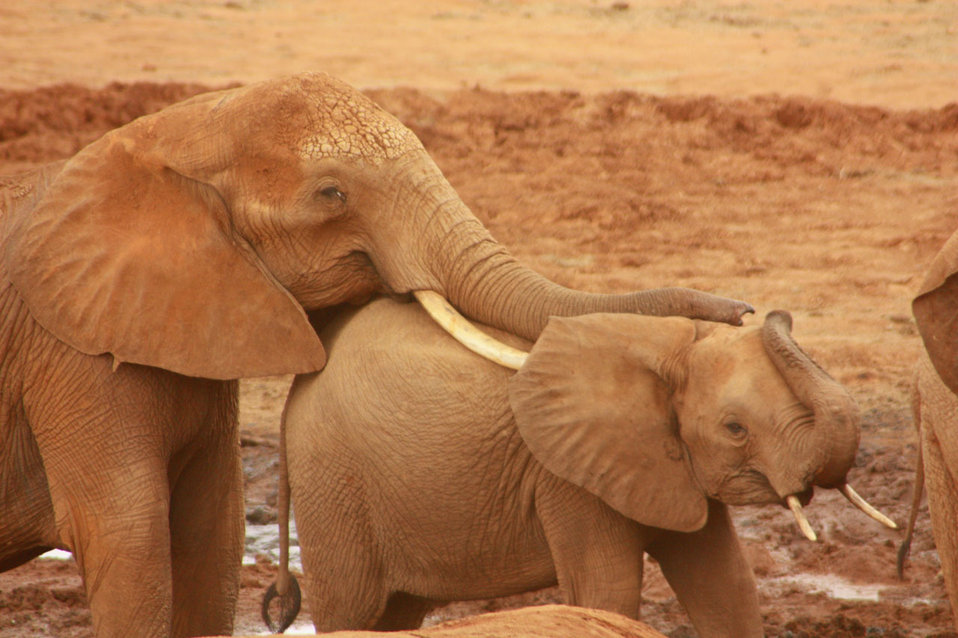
Elephants in tsavo.